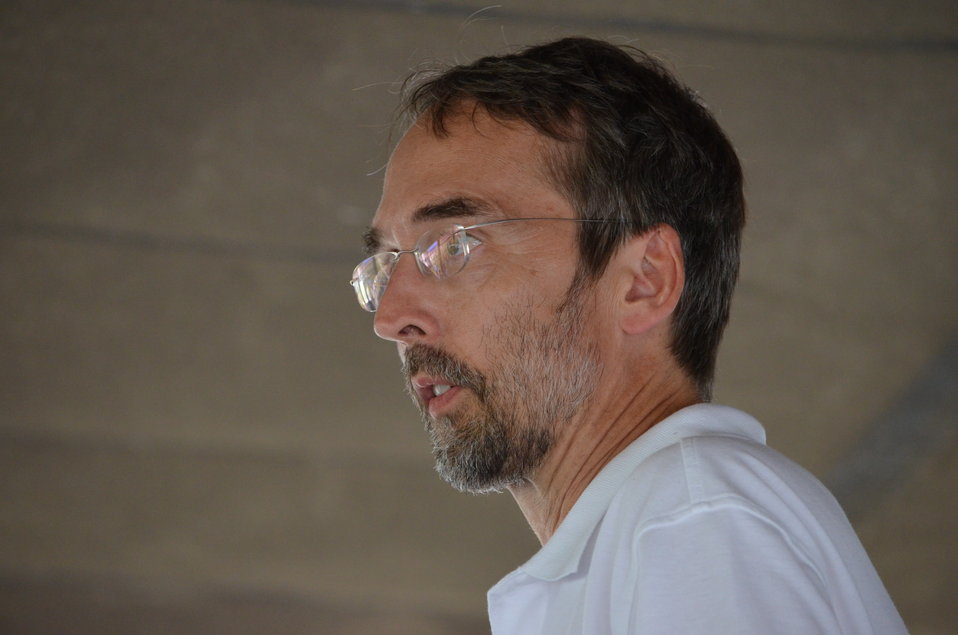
Wildlife artist Joe Hautman.